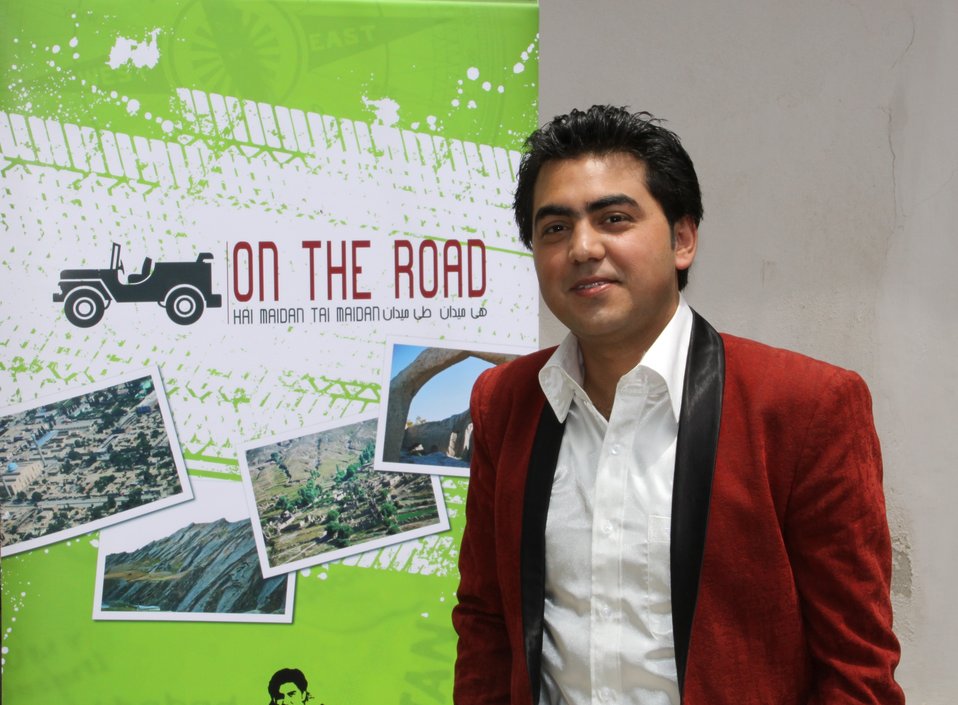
وایس کمونیکیش معلومات سروی تماشای (On the Road) را نشرنمود

کابل افغانستان (15 جون سال 2010)- امروز موسسه ((Wise Strategic Communication در همکاری با مساعدت اداره انکشافی بین المللی ایالات متحده(USAID) یافته های ابتدایی را از سروی تماشای برنامه (هی میدان و طی میدان) تلویزیون طلوع که بیش از 35 فیصد مردم افغانستان این پروگرام را در هر شنبه شب ها تماشا مینمایند، نشر نمود.

موسسه وایس یک سروی را در جریان ماه اپریل در 9 ولایت مورد نظر که بیش از 2000 اشتراک کننده را که رای خود را ابراز داشتند، براه انداخت که در آن 45 مصاحبه خبررسان عمده اجرا شد و به تعداد 9 گروپ تمرکز کننده را جهت ارزیابی نظریات و تاثیر این نمایش را بالای بیننده گان افغان ارزیابی نمود.

برنامه (On the Road) که توسط اداره انکشافی بین المللی ایالات متحده کمک مالی میگردد، افتخار ملی افغانستان را به حیث یک تنوع اما یک ملت متحد اعمار مینماید. هرهفته، این پرگرام روی منطقه ویا ولایت مختلف تمرکز مینماید. میزبان این برنامه مجیب عارض جنبه های اجتماعی، فرهنگی، و تاریخی ولایات مختلف را از طریق صرف طعام محلی، ورزش های محلی، و دیدن از جاهای تاریخی کشف مینماید. این برنامه تلویزیونی داستان های واقعی اکثرنقاط سراسر کشوربشمول مثال های مختلف از پروژه های انکشافی موفق توسط دولت افغانستان در همکاری با جامعه جهانی را ارائه مینماید. از طریق مصاحبه های مجیب با دهاقین، دوکتوران، کارگران، جوانان و رهبران محلی، افغانها تغیرات و تاثیرات تلاش های انکشافی اخیر را در داخل کشور خود شان با کلمات بدون متن افغانی مشاهده مینمایند.

بعضی ازیافته های عمده این سروی قرار ذیل میباشند:

•تماشای این برنامه بصورت خوب توازن شده، معلومات رای گیری همچنان بیانگر اینست که هزاره ها، تاجک ها، پاسخ دهنده گان جوان و اکثر افراد تحصیل یافته به احتمال بیشتر این برنامه را تماشا مینمایند.

•این برنامه بصورت بی نهایت خوب از طریق پاسخ دهنده گان در مورد فرصت برای آموزش فرهنگ و تاریخ نقاط مختلف افغانستان مورد قبول واقع شد. بصورت مکمل، 97 فیصد بیننده گان خواستار ادامه این نمایش بوده و سفارش های مهم آنها عبارت از طویل ساختن هر نشر این برنامه بود.

•ازجمله یادداشت ها یک دریافتی بود که بیننده گان این برنامه را با ساختار ملت ارتباط دادند.

ازطریق گروپ های تمرکز که موسسه وایس کمونیکیشن آنرا رهبری نمود، تاکید خاص روی وحدت ملی ازطریق ( On the Road) صورت گرفت که عبارت از تشویق این برنامه هفته به هفته میباشد. بعضی از پاسخ ها در این زمینه قرار ذیل میباشد:

•این برنامه یک نقش مثبت را در وحدت ملی افغانها بازی مینماید. زمانیکه افغانها سایر مردم را در دیگر ولایات با عین دین مشاهده نمایند، و در مورد رسوم و راه های زنده گی معلومات حاصل نمایند، آنها درک مینمایند که در بین آنها هیچ نوع اختلاف وجود ندارد.

• نقطه مثبت این است که میخواهم ذکر نمایم که مردم عنعنات مردم سایر ولایات را مشاهده نموده و این موضوع در کاهش مشکلات نژاد پرستی کمک مینماید.

آقای ویلیام فری رییس اداره انکشافی بین المللی ایالات متحده اظهار داشت، ' سروی که توسط وایس کمونیکیشن صورت گرفت بیانگر و با اعتبار ساختن تمام اهداف اینکه چرا این نمایش موفق بوده، میباشد. این برنامه مردم افغانستان را با هم یکجا نموده و روابط سیاسی و اجتماعی گذشته را به منظور پذیرفتن فرهنگ های مختلف و متنوع که این کشور آن را ارائه مینماید، تامین مینماید. ما ازفراهم نمودن مساعدت ملی به این برنامه افتخار داریم و امیدواریم که این برنامه یا نمایش برای سال های متمادی آینده دوام نماید.

هدف تلویزیون طلوع که جز از موبی گروپ بوده این است که با ایجاد برنامه های ابتکاری افغانها را خوشحال ، با خبر و برای آنها سرگرمی ایجاد نماید. رییس عمومی موبی گروپ آقای سعد محسنی اظهار چنین داشت،'جالبترین جنبه کامیابی پروگرام هی میدان-طی میدان این است که اولین برنامه از نوع خویش در افغانستان بوده که توانسته است که از طریق آن روزمره افغانها یک دیگر خود را خوبتر بشناسند. بالاتر از همه این است که ما تا حال تنها یک تصویر کوچک از افغانستان را دیده ایم و هنوز هم چیز های بیشتر مانده که دیده شود.'

شما میتوانید راپور مکمل سروی را از سایت www.irp-af.com/ بدست آرید.